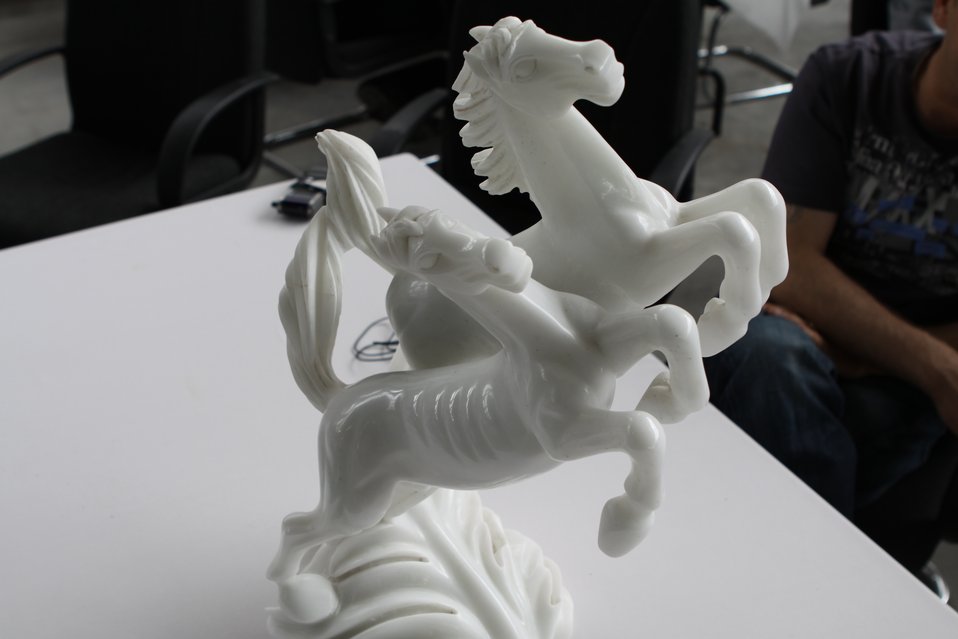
100525 Hirat Marble Conference 274